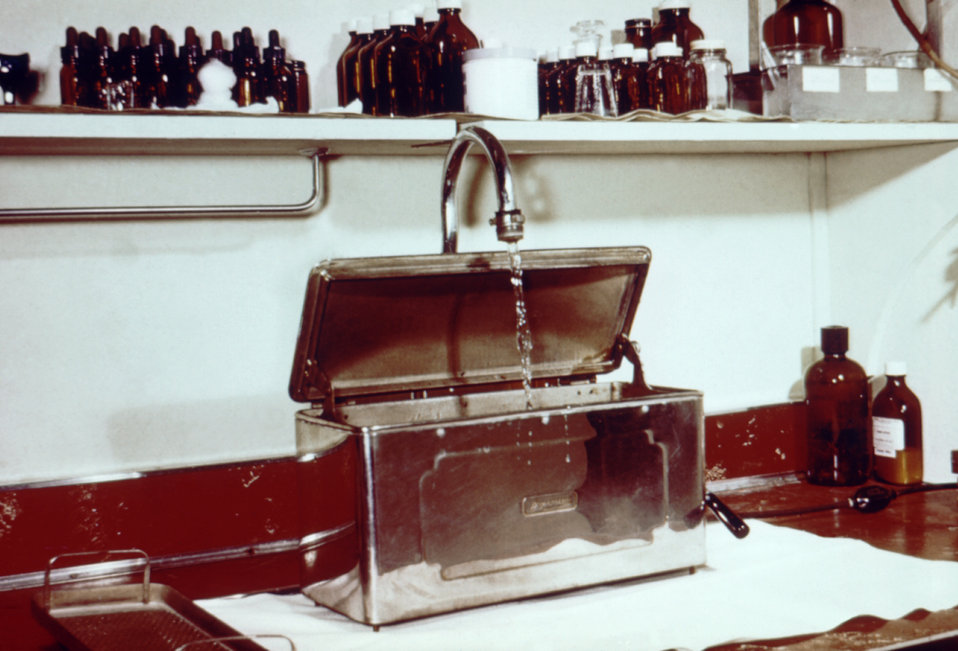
This photograph show a properly installed water inlet on an instrument sterilizer located above its water spill rim.